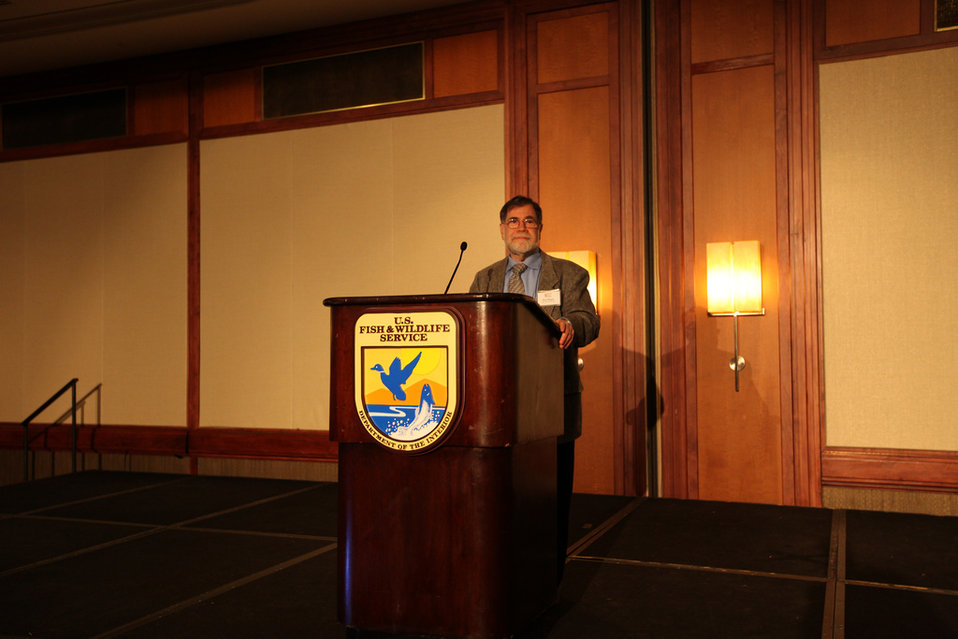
Alan Nogee, Union of Concerned Scientists

Alan Nogee from the Union of Concerned Scientists speaking at the Northeast Region Biologists Conference.